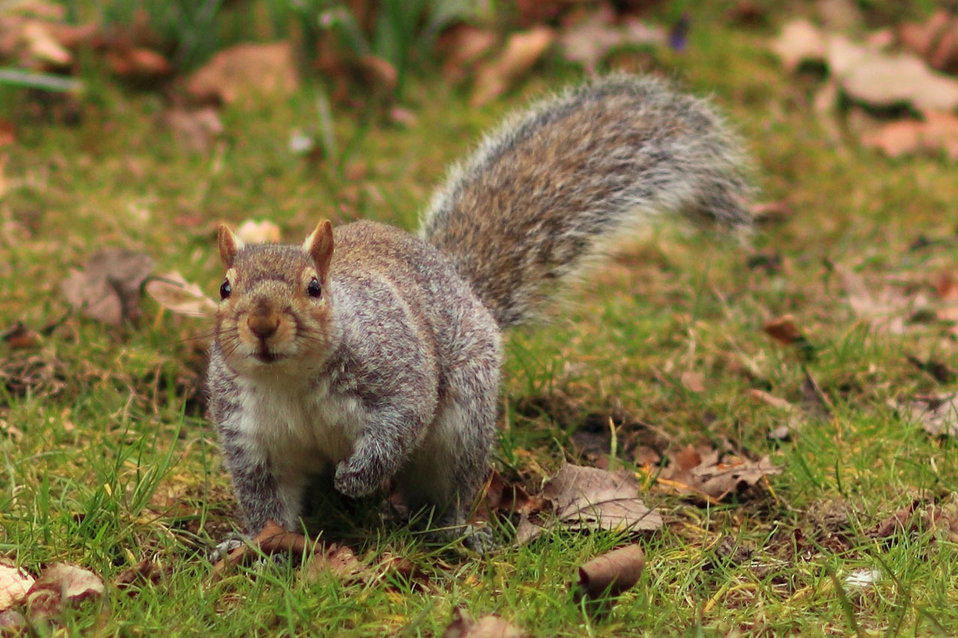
Squirrel on grass

Squirrel in park looking at us.